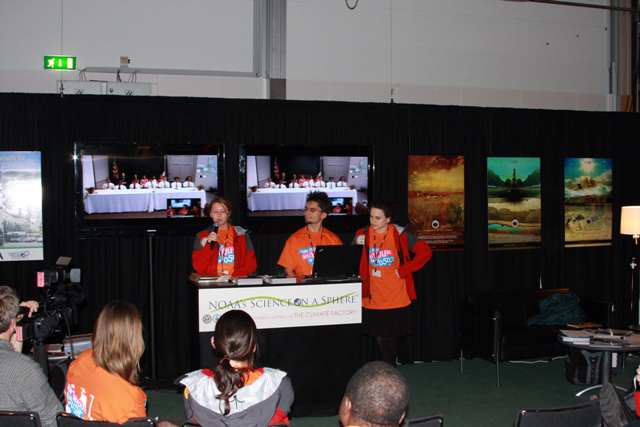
Youth Delegation at COP-15

Members of the youth delegation at COP-15 participate in a DVC with U.S. students in Washington and Virginia sponsored by the U.S. Forest Service at the U.S. Center at COP15, Bella Center, Copenhagen, Denmark on December 11, 2009.